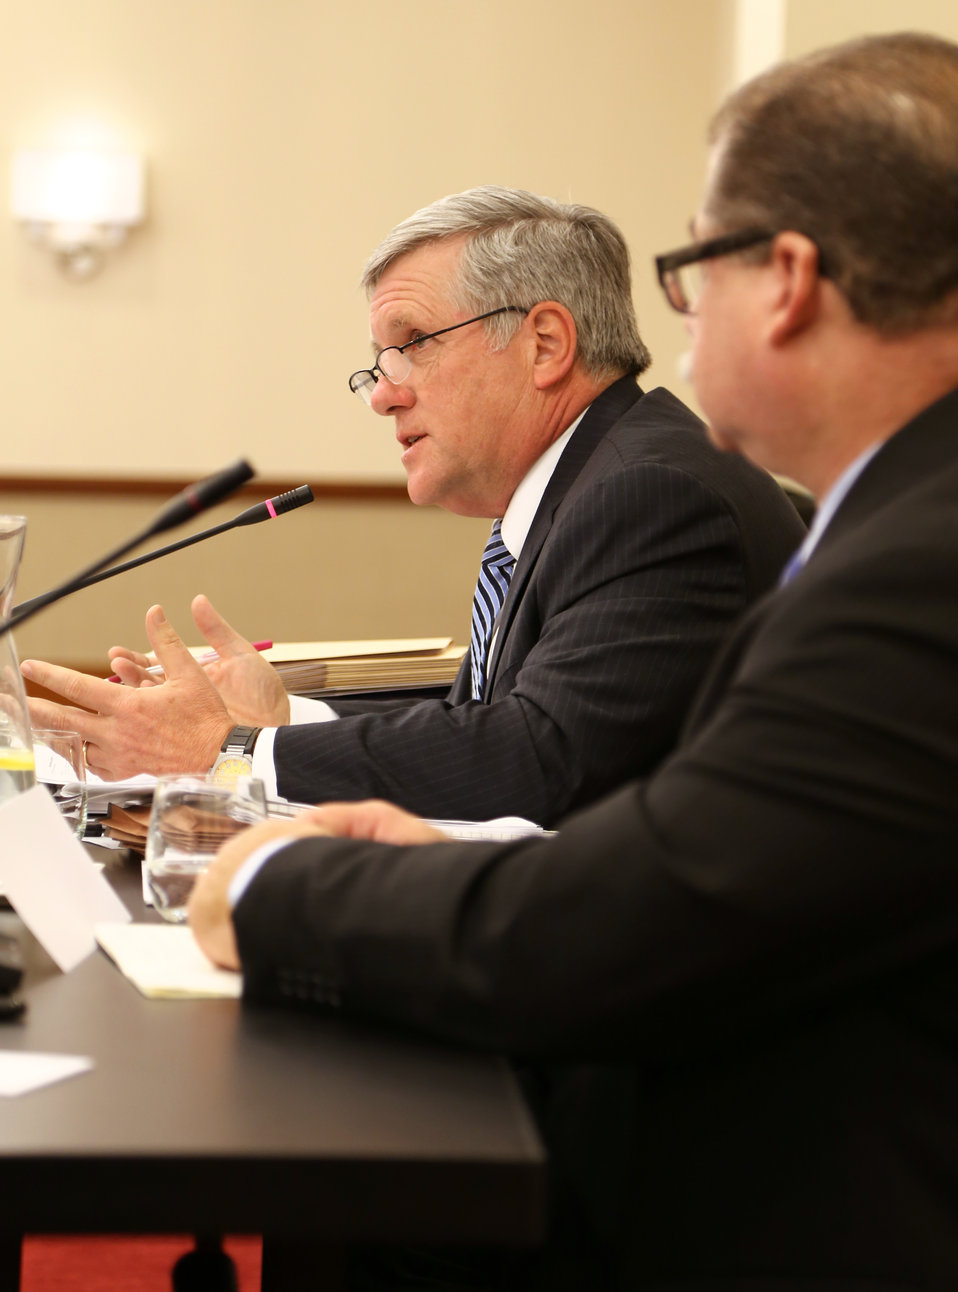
Wildlife Trafficking Advisory Council Meeting March 20, 2014